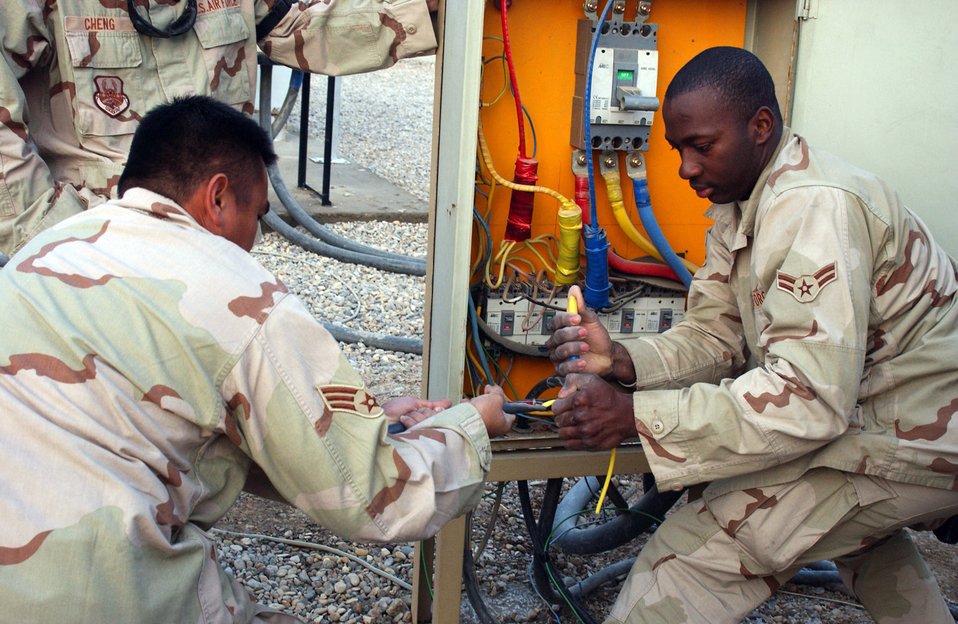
Wire service

ALI BASE, Iraq (AFPN) -- Heavy rains on Christmas Day seeped into and shorted out wiring that served half of the 407th Air Expeditionary Group headquarters building. Airmen from the 407th Expeditionary Civil Engineering Squadron's electric shop dug a 150-foot trench and ran fresh wire. Here, Senior Airman Albert Escobal (left) and Airman 1st Class Nicoy Thompson remove a section of sheathing and insulation from the wire. They then attached the wire to terminals.